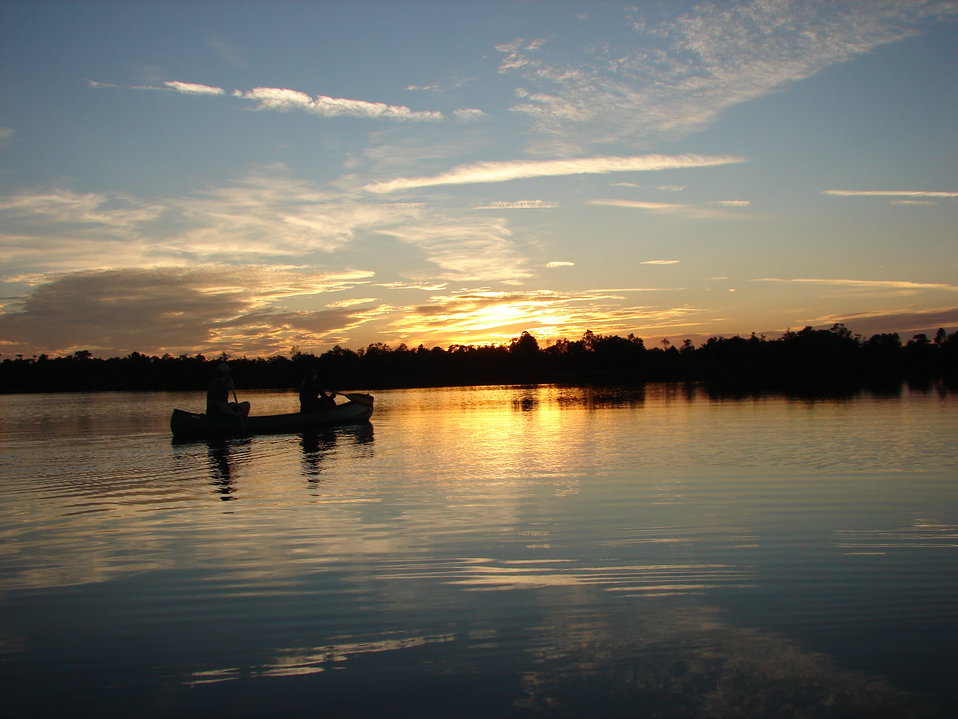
Night falls, Okefenokee

Canoeists watching sunset in Chesser Prairie, Okefenokee National Wildlife Refuge, GA. Joy CampbellOkefenokee Adventures